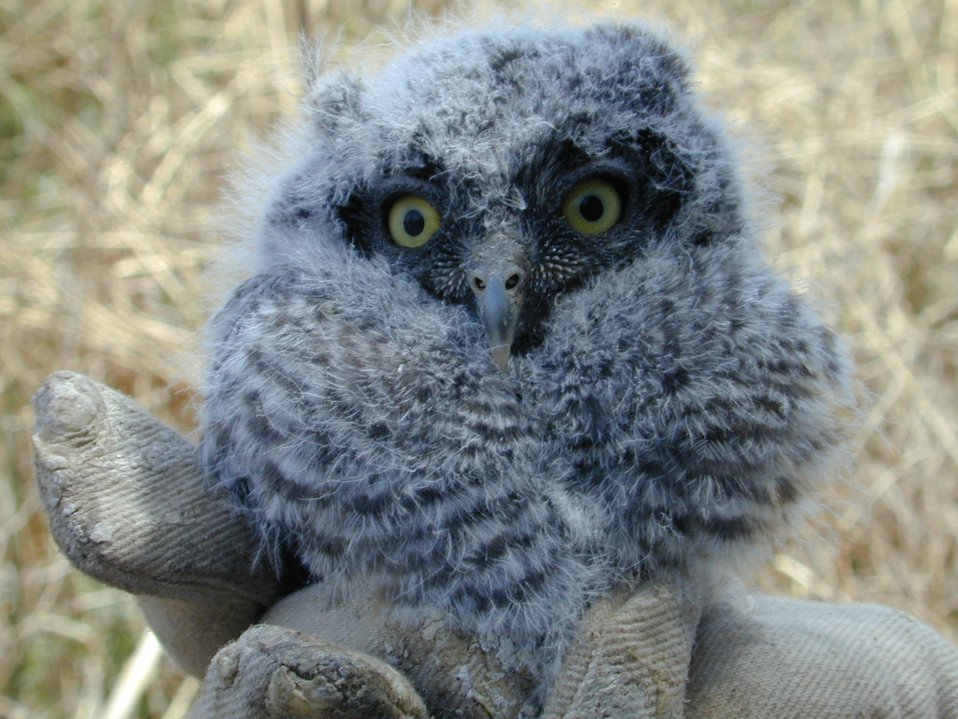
Environmental Education Fire Workshop Timberline High School Fall 2000